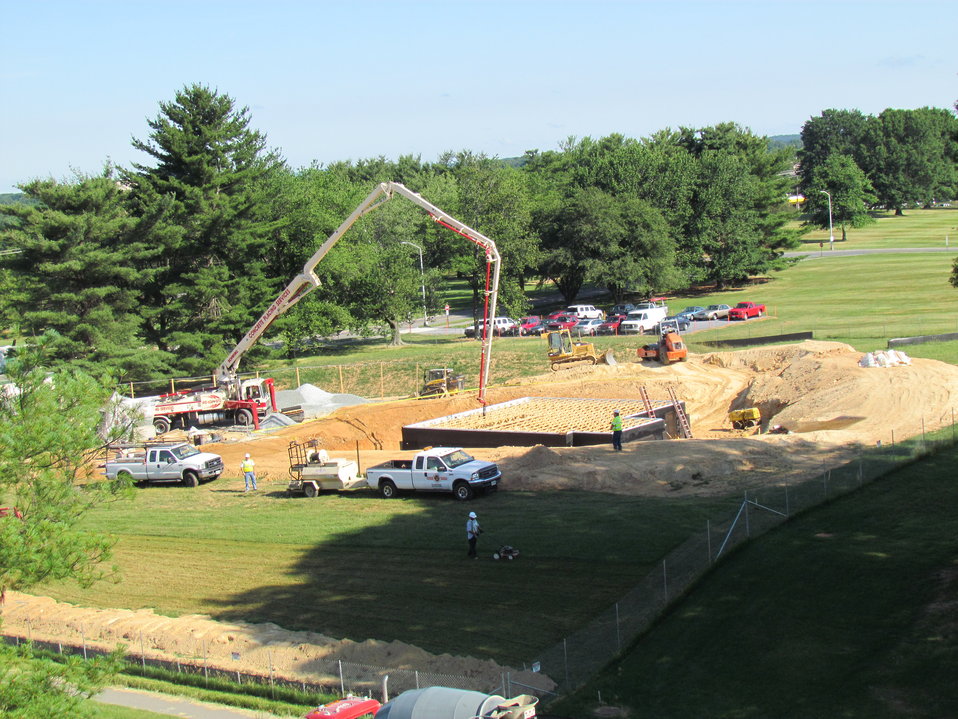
Net-Zero Energy Residential Test Facility - Photo showing concrete pumper being used to pour basement slab.